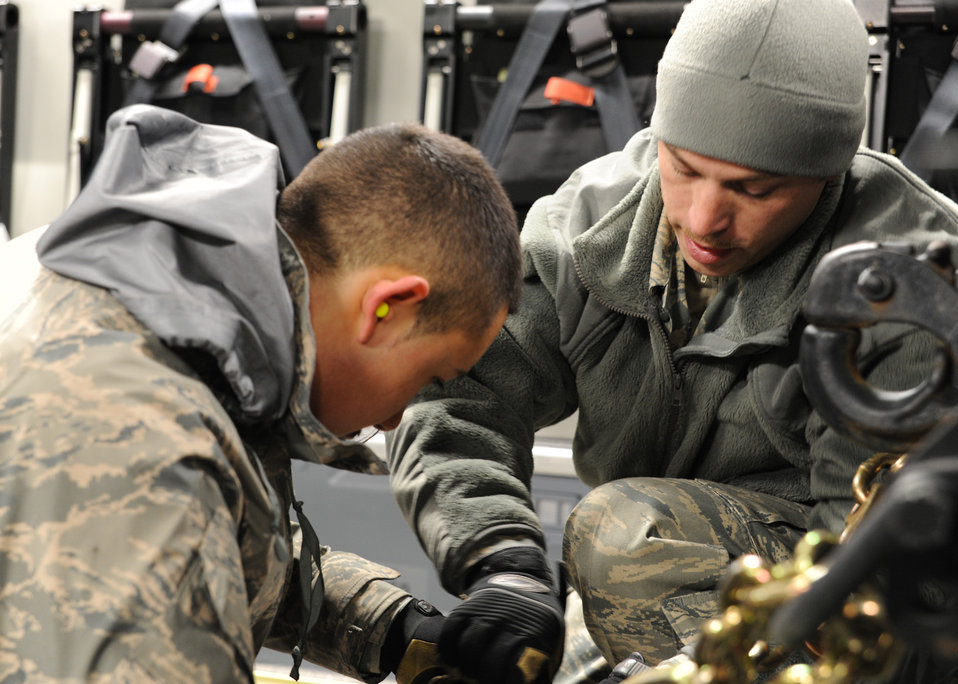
Haiti Humanitarian Effort

Tech. Sgt. Jeremy Morris and Airman 1st Class Juan Bayron own a mobile command and control unit onto a Charleston AFB C-17 at Joint Base McGuire-Dix-Lakehurst, New Jersey, Jan. 15, 2010. The Charleston AFB C-17 was used to transport equipment needed to aid the humanitarian effort in Haiti. Sergeant Morris and Airman Williams are with the 305th Aerial Port Squadron.